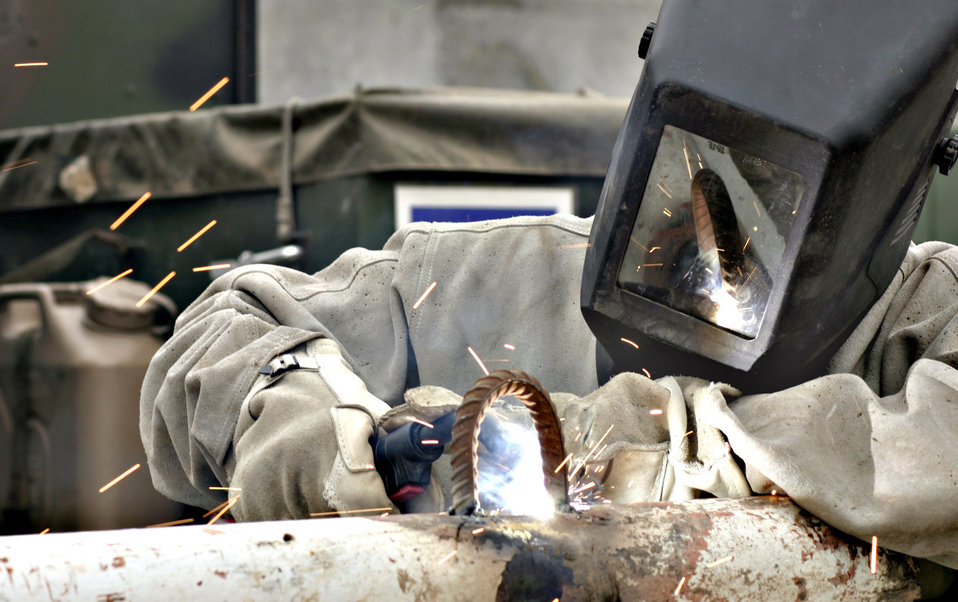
Sparks fly

BALAD AIR BASE, Iraq -- Lt. Col. Scot Shively welds a loop on the 727th Expeditionary Air Control Squadron's entry control gate here recently. The colonel, who commands the squadron, and other squadron Airmen are trained and qualified to do a variety of jobs to remain a completely self-sufficient, self-contained mobile unit. The Airmen of the 727th EACS are deployed from the 728th Air Control Squadron at Eglin Air Force Base, Fla. They arrived here in January.